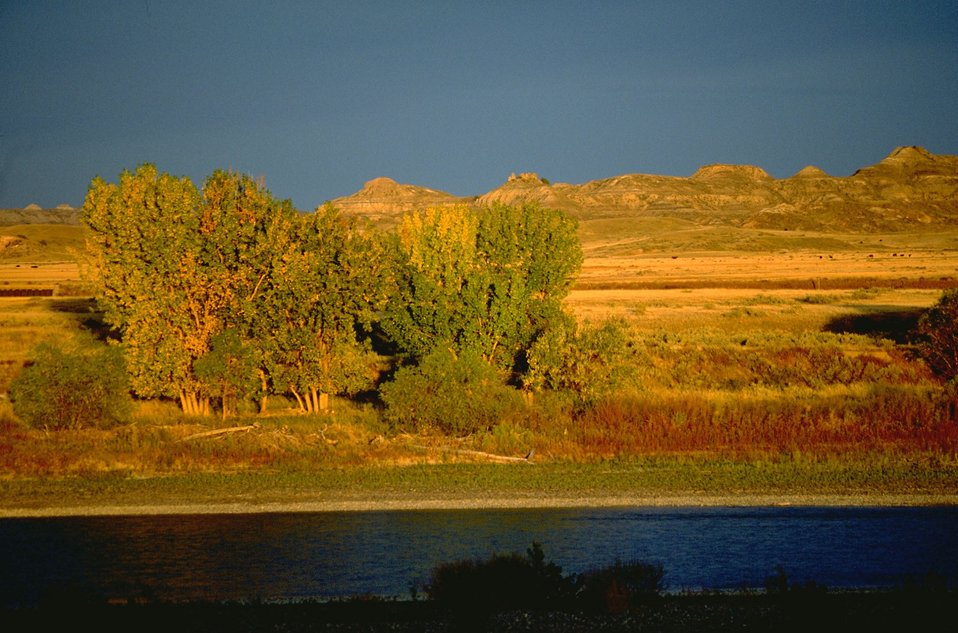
Late afternoon sun shining on the Yellowstone River bank